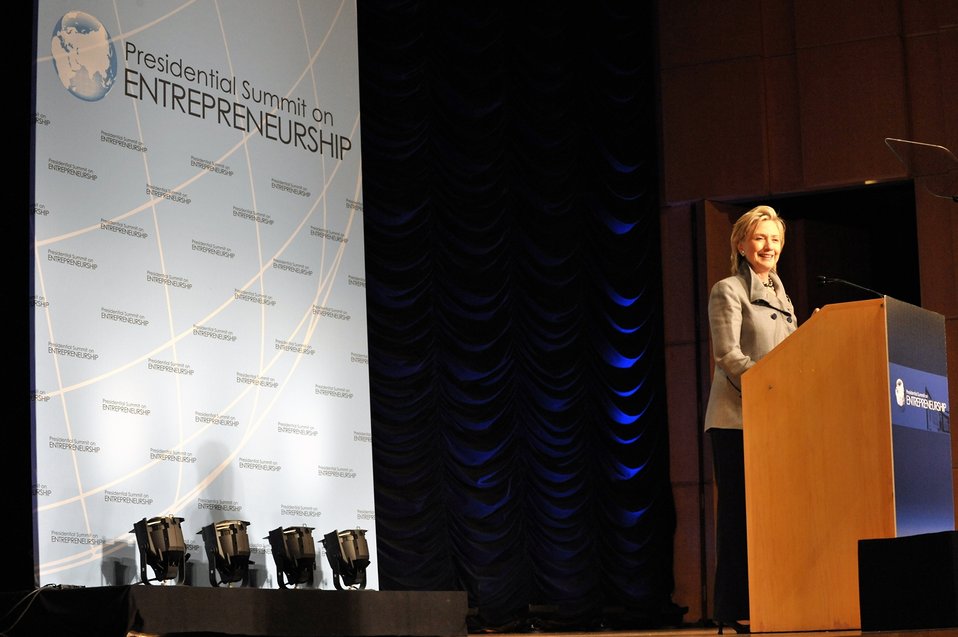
Secretary Clinton Addresses Presidential Summit on Entrepreneurship

U.S. Secretary of State Hillary Rodham Clinton delivers remarks at the 2010 Presidential Summit on Entrepreneurship, Washington, D.C., April 27, 2010.